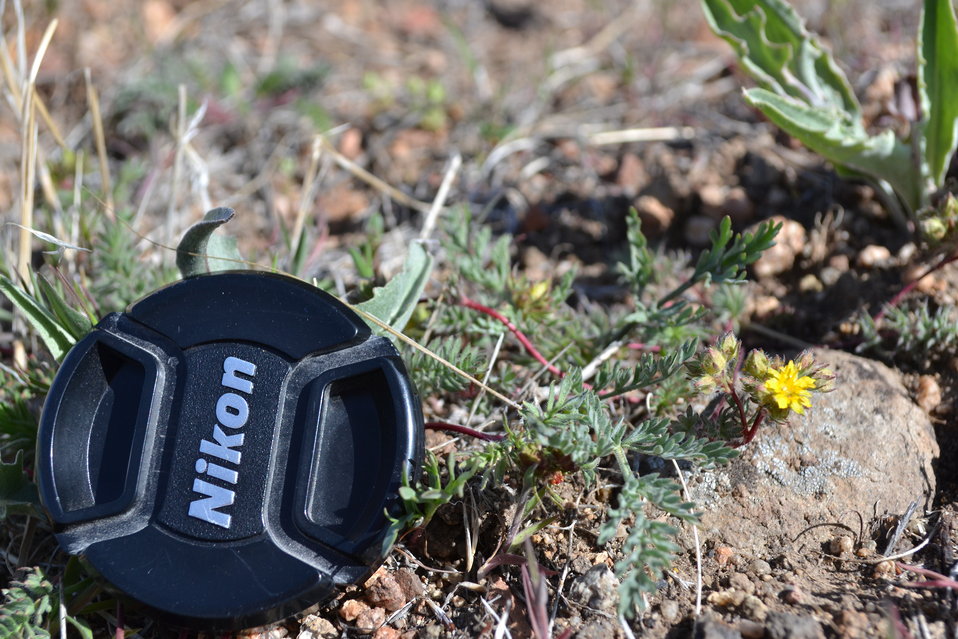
Webber ivesia.

Webber ivesia (Ivesia webberi) is a member of the rose family. It is a low spreading, perennial forb approximately ten inches across with greenish-gray foliage and dark red, wiry stems. The leaves are mostly clustered around the base of the stems, with four to eight pairs of leaflets crowded at the tip, and generally covered with long, silky grayish hairs. Flowering typically begins in May and extends through June. The small bright yellow flowers occur in groups. The whole plant becomes reddish-tinged late in the season. This plant occurs in Washoe and Douglas Counties in Nevada and in Lassen, Plumas, and Sierra Counties in California.